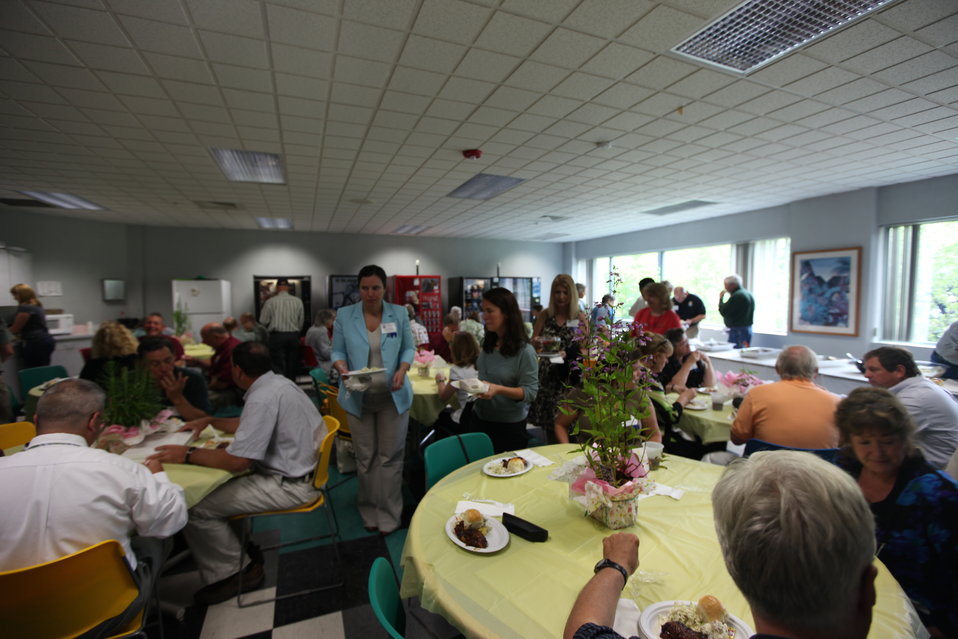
Northeast Region Employee Appreciation Awards

Luncheon